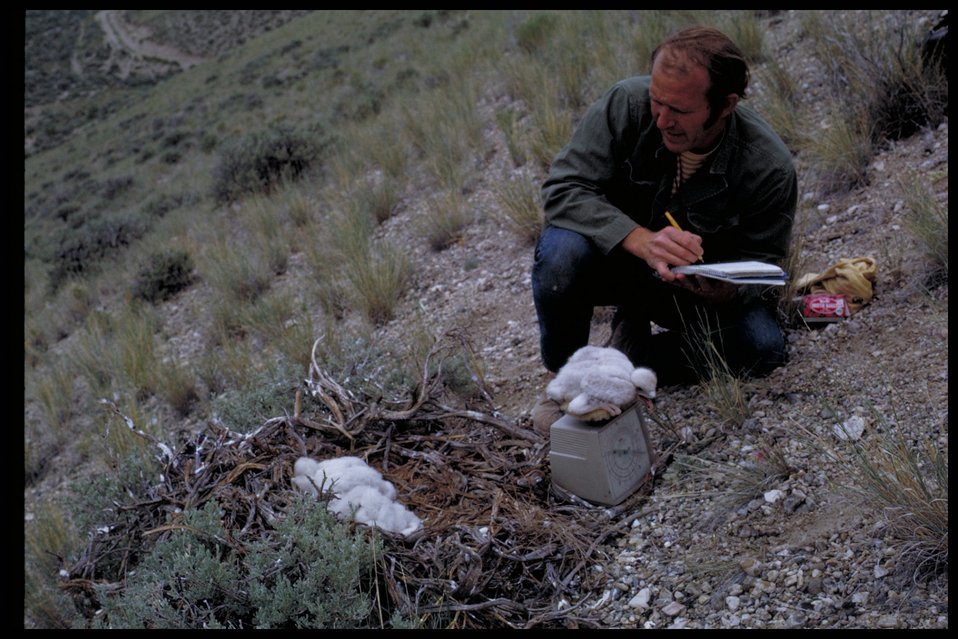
Examining chicks Birds of Prey National Conservation Area BOP Owyhee Field Office LSRD Lower Snake River District